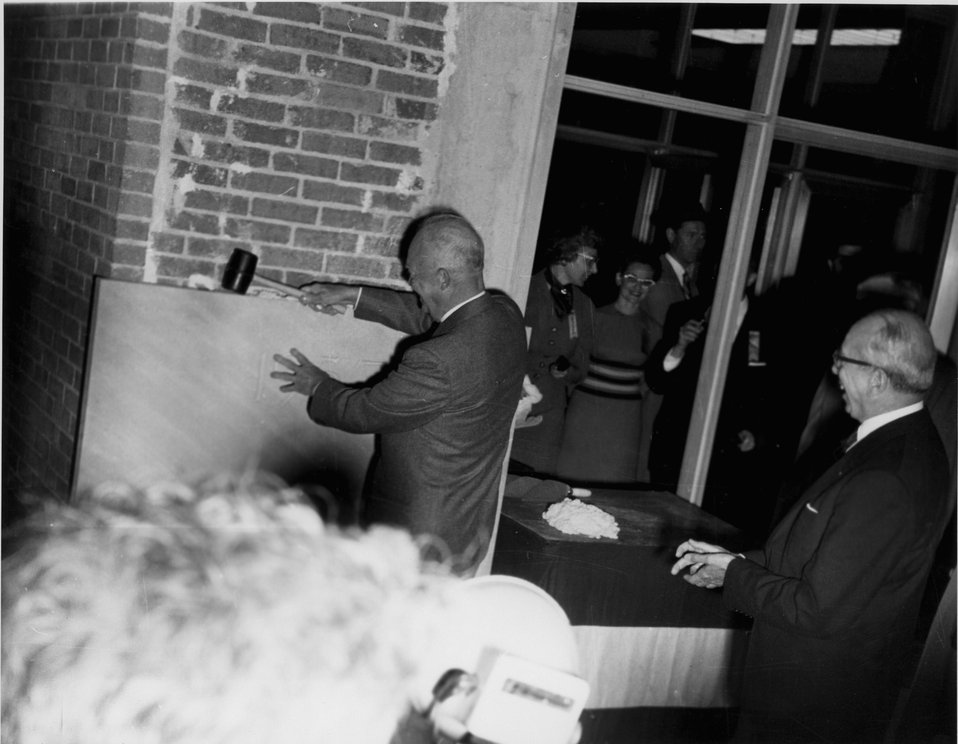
President Eisenhower lays the cornerstone, Nov. 8, 1957, as AEC Chairman Strauss looks on. c. 1957